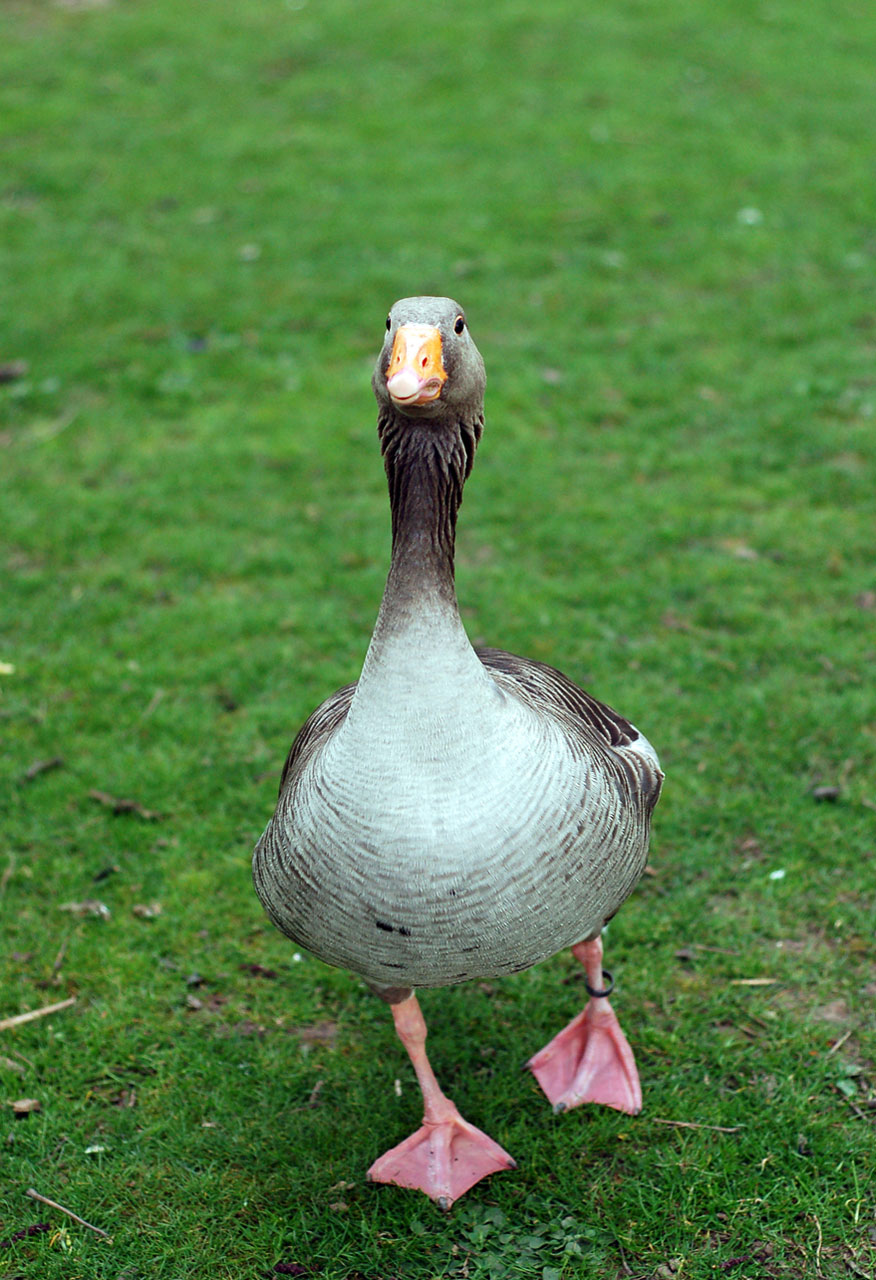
Curious goose

Curious brown goose in a local park.